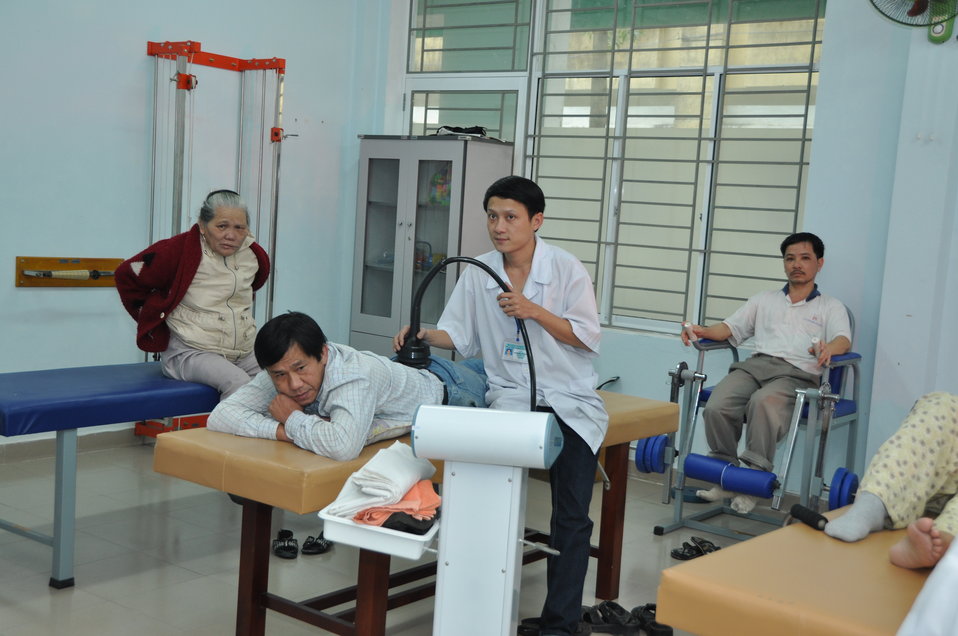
USAID support to Thanh Khe District Hospital

USAID-supported equipment and training help the staff at Thanh Khe District Hospital to meet the physical therapy needs of the disabled population of Danang.